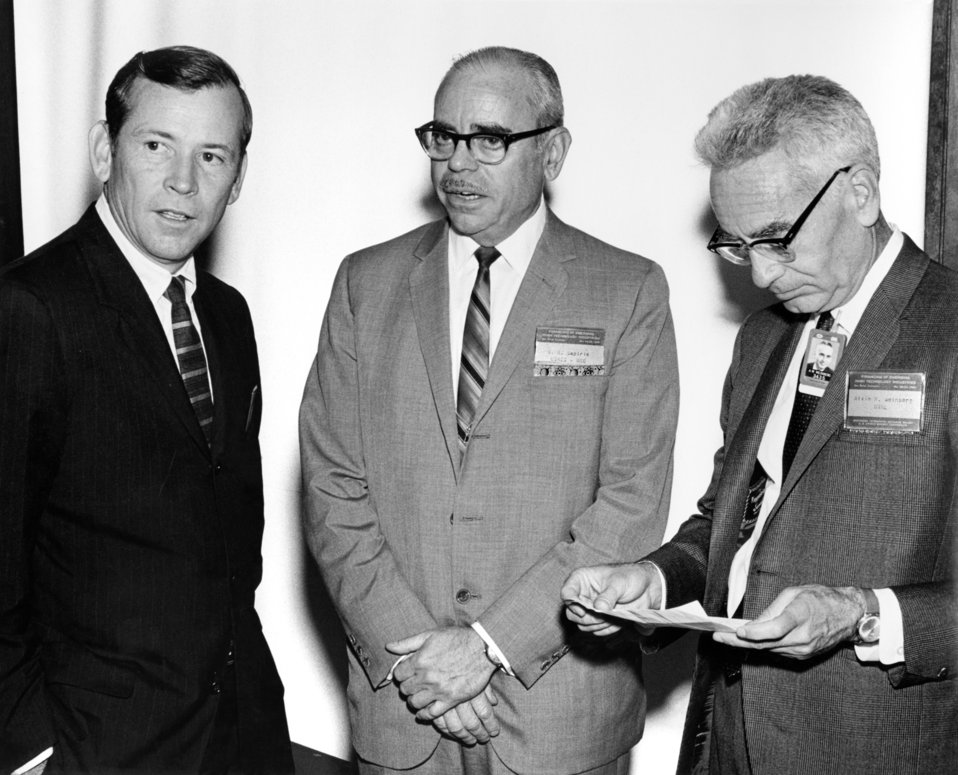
SINB Conference Oak Ridge 1969

69-143-3 DOE photo Frank Hoffman 2-22-1969 L to R SEn. Howard Baker, AEC Manager Sam Sapirie, and ORNL Director Alvin Weinberg